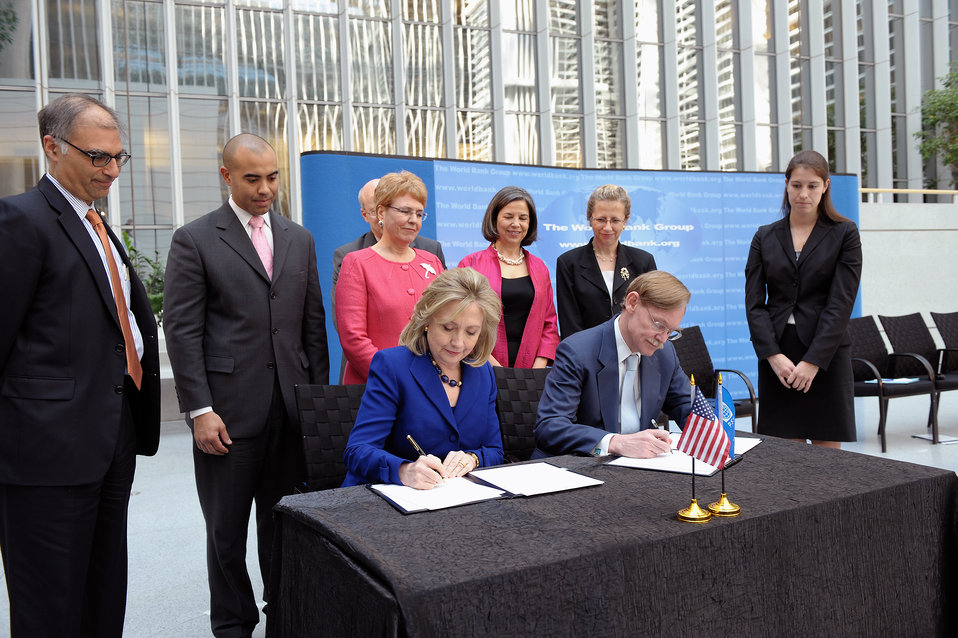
Secretary Clinton Signs the U.S.-World Bank Memorandum of Understanding on World Water Day

U.S. Secretary of State Hillary Rodham Clinton signs the U.S.-World Bank Memorandum of Understanding on World Water Day in the World Bank Atrium in Washington, D.C., on March 22, 2011.